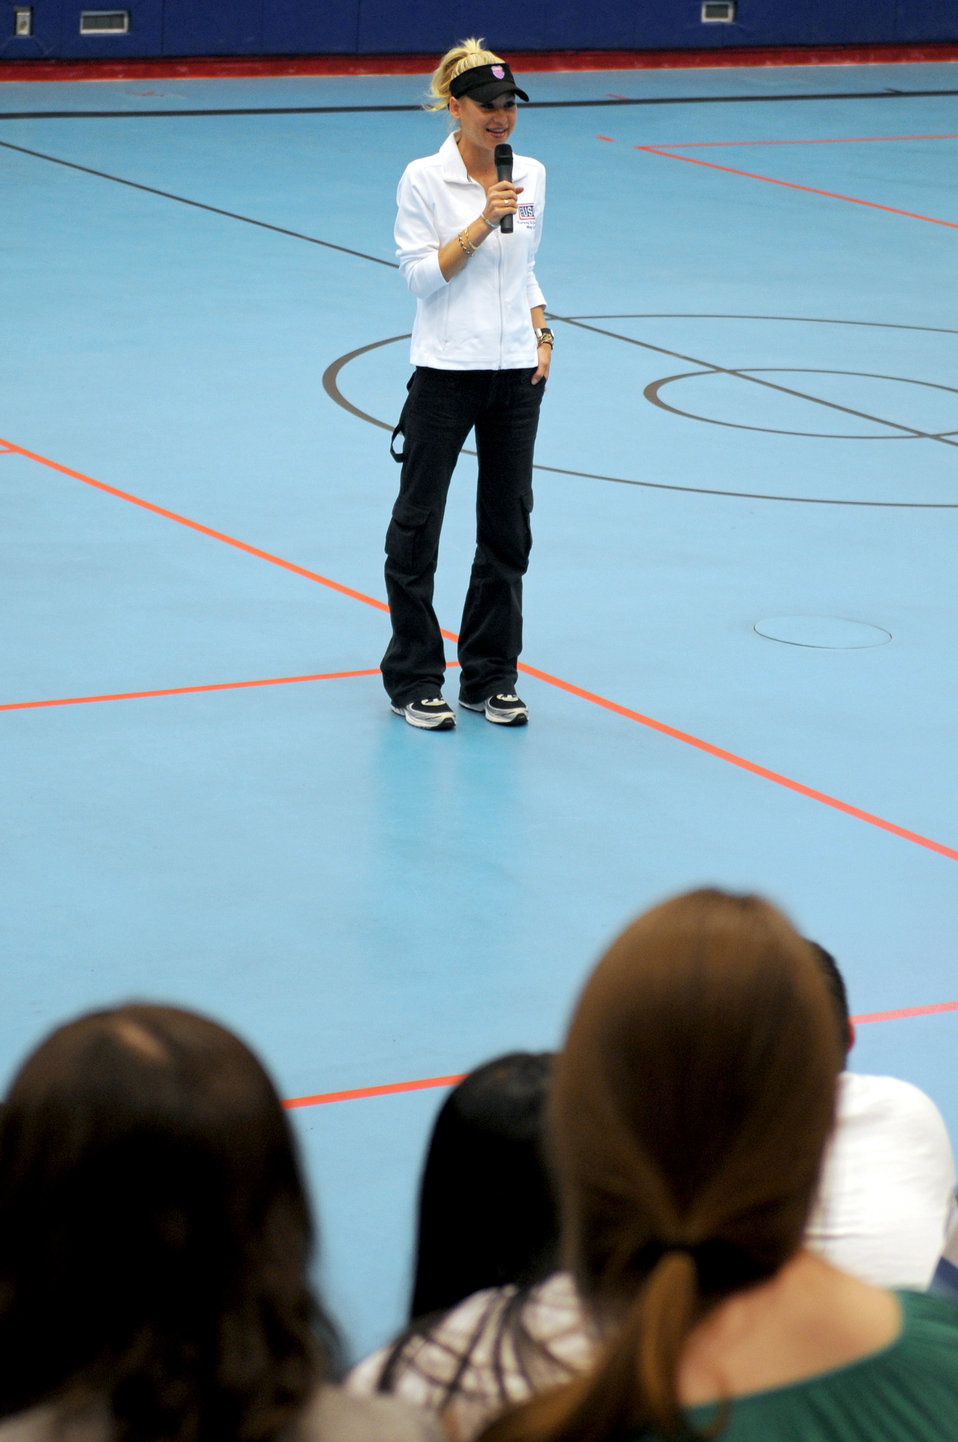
Anna Kournikova visits Ramstein students

Anna Kournikova talks to Ramstein High School students May 19 at Ramstein Air Base, Germany. She talked to them about school, her tennis career and working hard. Ms. Kournikova, a former professional tennis player, visited with students as part of a six-day educational United Service Organizations tour.